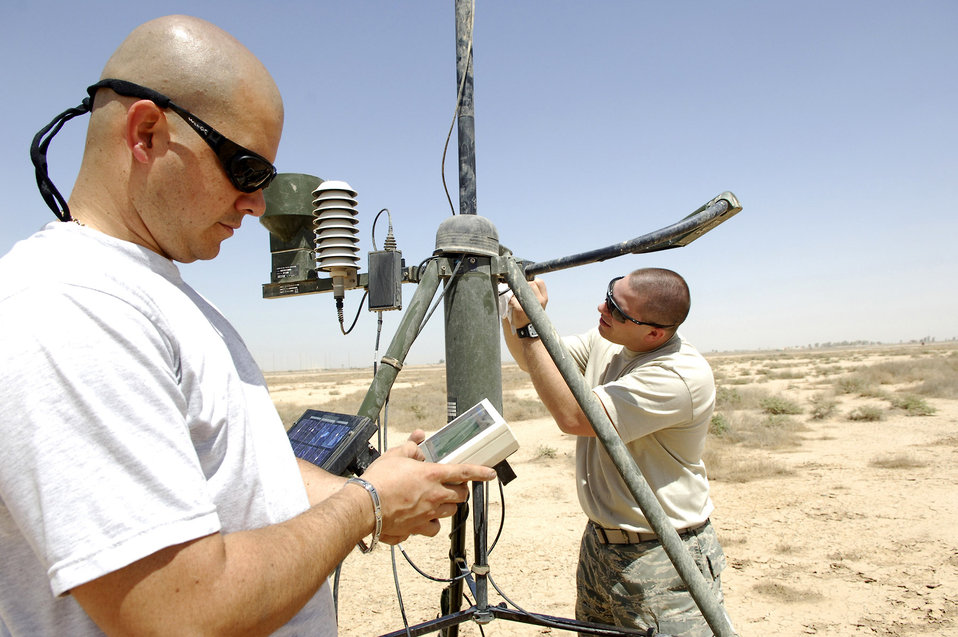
It's a 'shamal world' for combat weather Airmen

Staff Sgts. Donald Blasini and Richard Skelly work together to ensure the tactical weather equipment is working properly June 14 at Joint Base Balad, Iraq. The equipment, which is positioned on the airfield, monitors weather conditions. Dirty sensors can affect the accuracy of the readings so the equipment must be cleaned regularly. Sergeant Blasini is deployed from Shaw Air Force Base, S.C., and Sergeant Skelly is deployed from Andrews AFB, Md. Both are combat weather forecasters assigned to the 332nd Expeditionary Operations Support Squadron Combat Weather Flight.